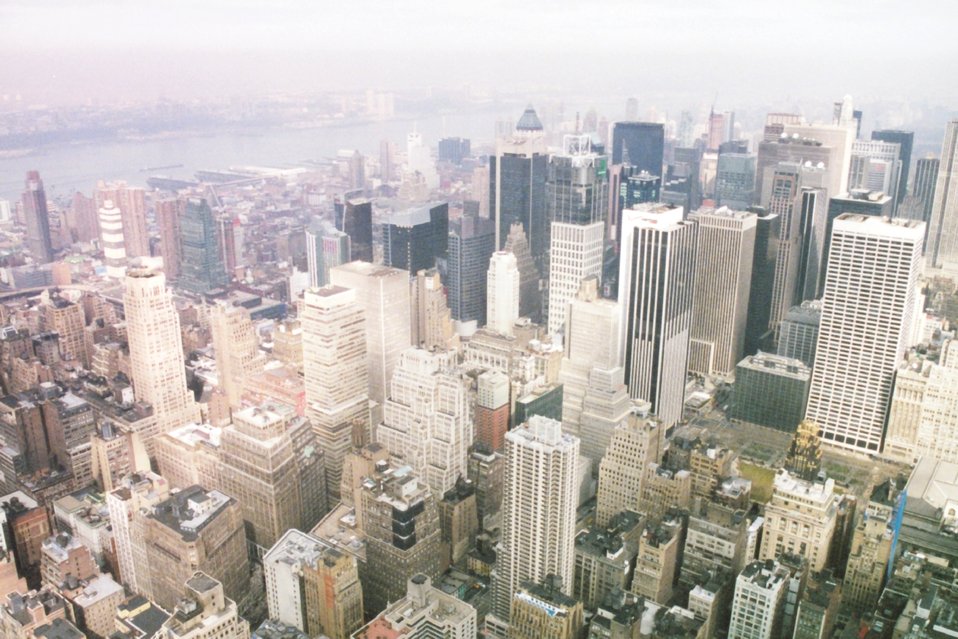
New York skyline from above.